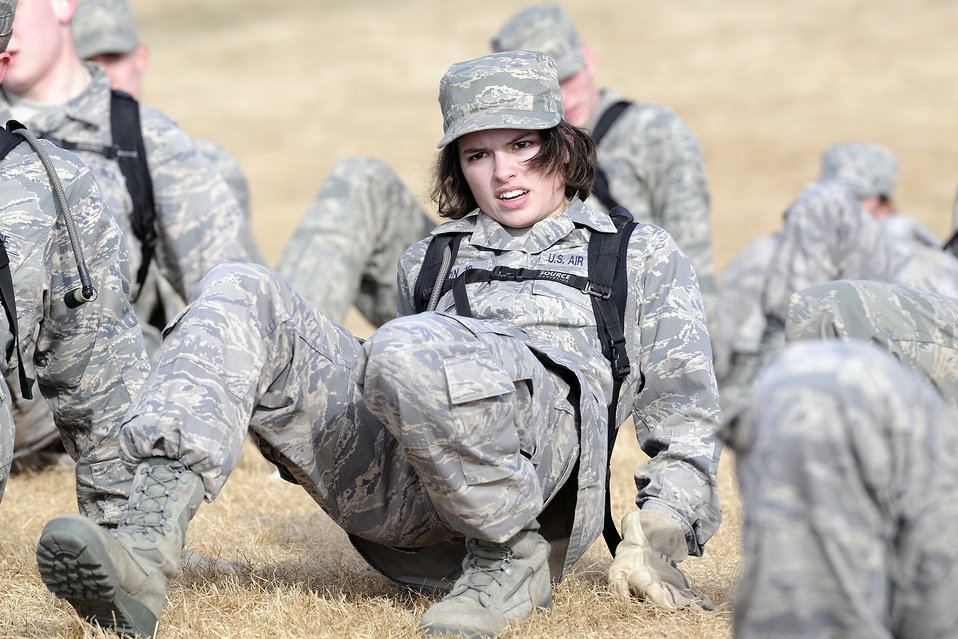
US Air Force Academy, CO

Cadet 4th Class Madison Chilton performs a crawl up Spirit Hill on the U.S. Air Force Academy's Terrazzo during Recognition. Recognition marks the transition of the fourth classmen to upper class status. It is the ceremonial acknowledgement that the fourth class has successfully met the training requirements expected of it, and is prepared to continue its four-year journey through the Academy.